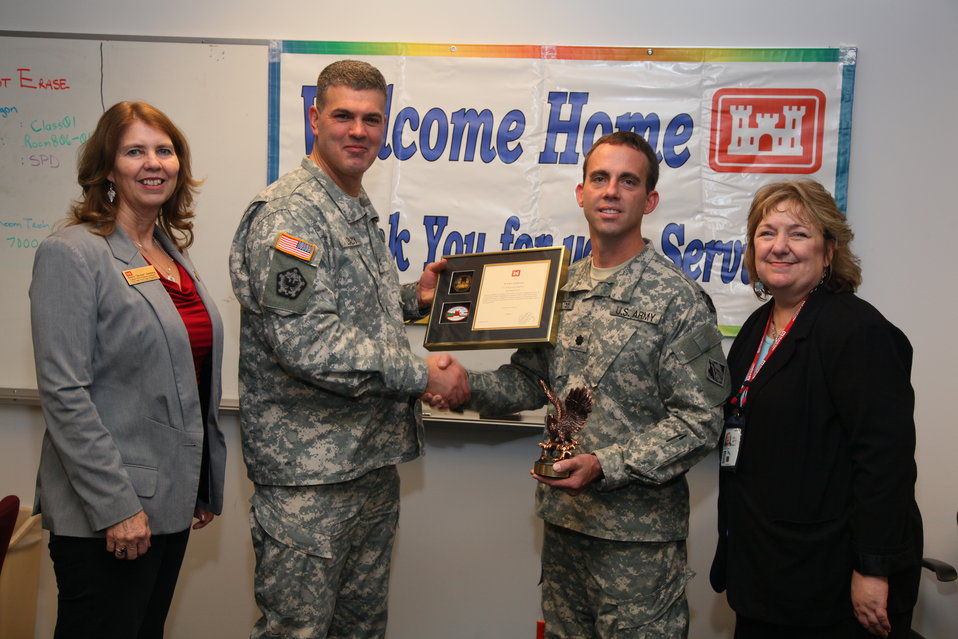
Sacramento District welcomes home Afghanistan volunteers

Sacramento District deputy district commander, Lt. Col. Braden LeMaster receives an award from district commander, Col. Bill Leady, for his service in Afghanistan at a welcome-home ceremony in Sacramento, Calif., Jan. 13, 2012. Five district employees were honored for recent Overseas Contingency Operations service at the event. In 2011 alone, the district saw 27 employees volunteer for service in Overseas Contingency Operations.